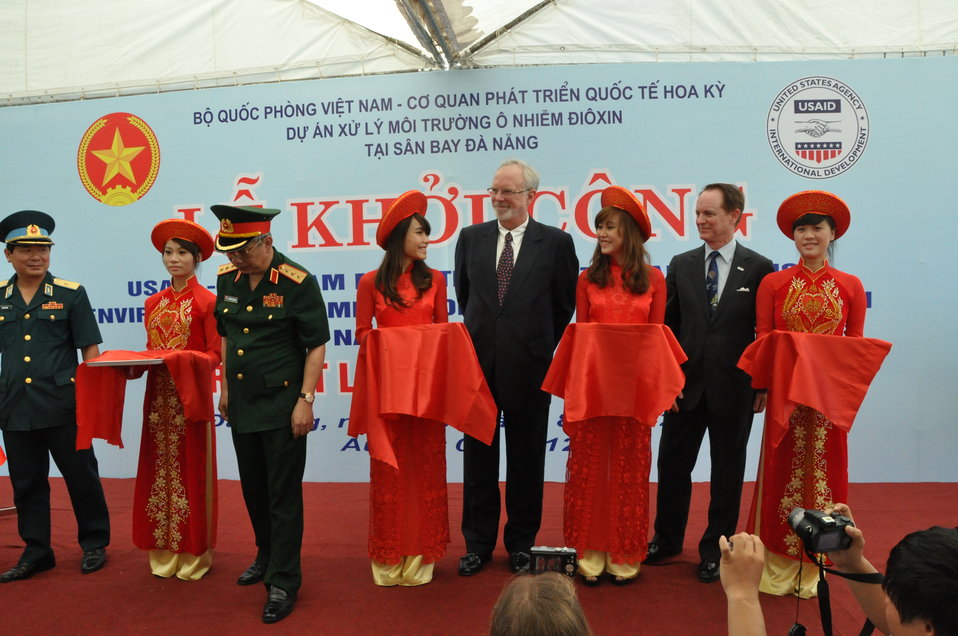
Ribbon Cutting at the Environmental Remediation of Dioxin Contamination at Danang Airport Project Launch

Danang, August 9, 2012